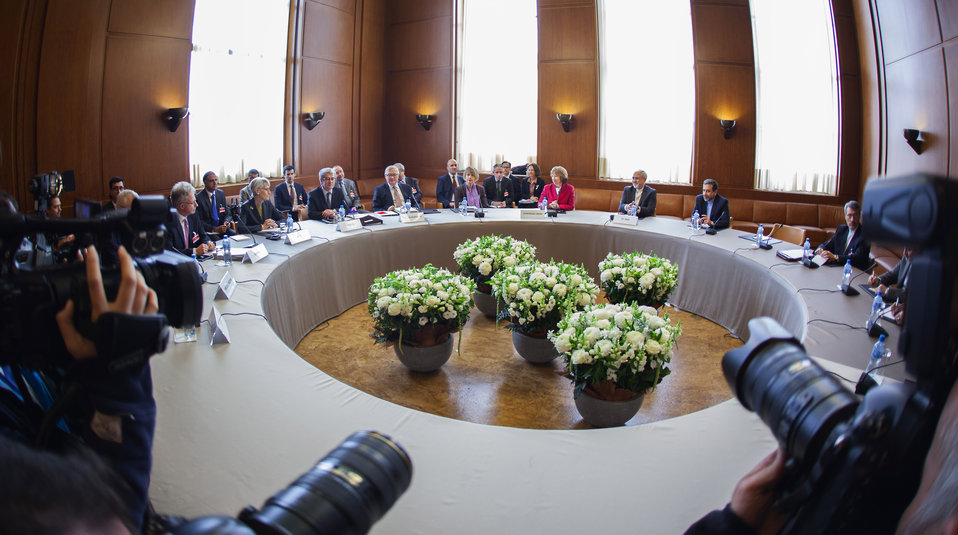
Under Secretary Sherman Participates in the P5 1 Talks on Iran

Under Secretary of State for Political Affairs Wendy Sherman leads the U.S. delegation to the P5 1 talks on Iran at the United Nations Offices in Geneva, Switzerland, on November 5, 2013.